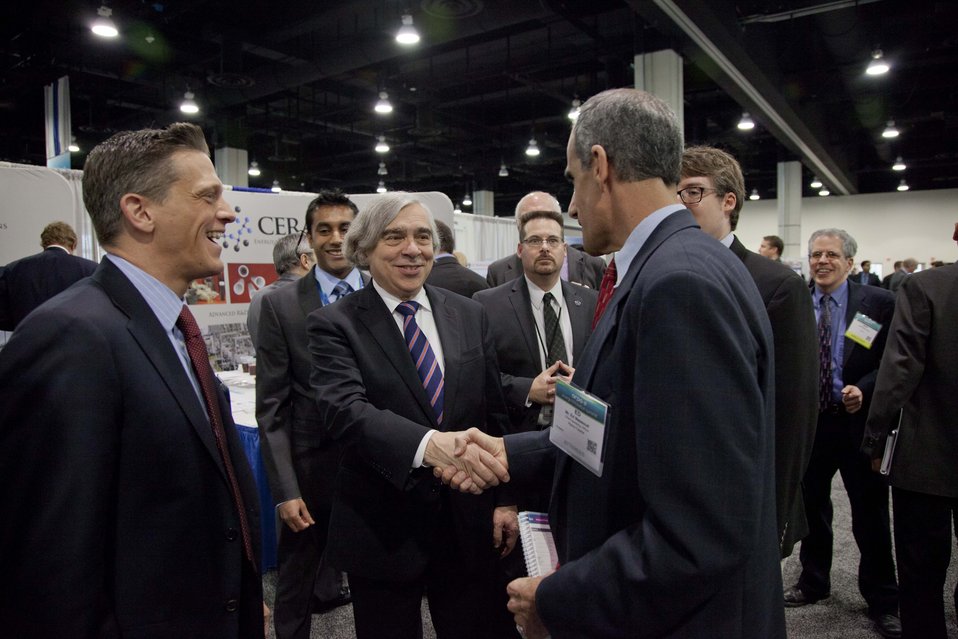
During the networking lunch break, Secretary Moniz toured the Technology Showcase, a collection of more than 300 cutting-edge technologies and innovations. The showcase participants include ARPA-E Awardees, entrepreneurs, researchers and experts in the field who are ready to collaborate with investors and decision makers to move their ideas into the marketplace.